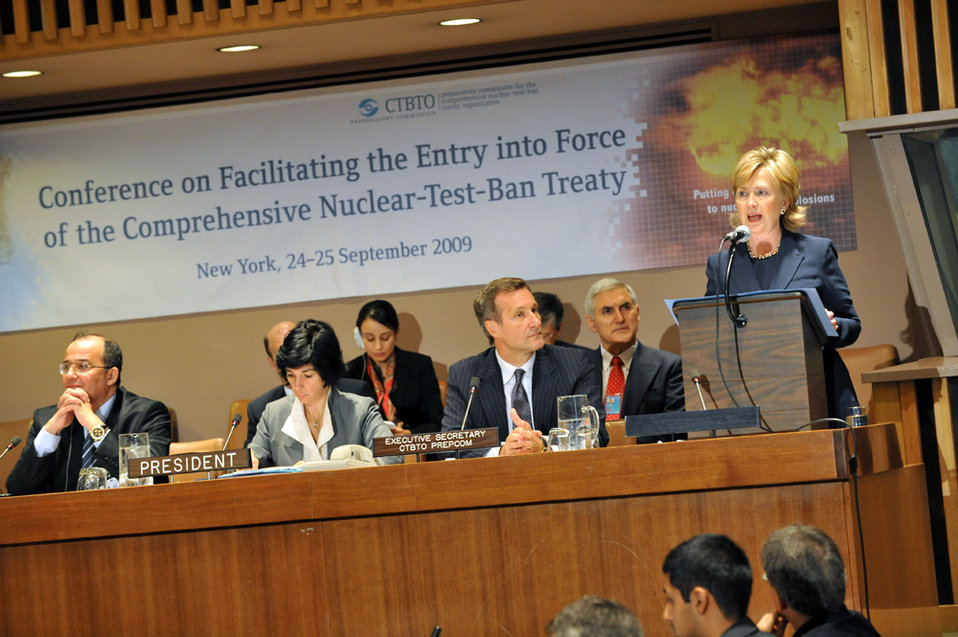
UNGA 2009: Comprehensive Nuclear-Test-Ban Treaty Conference

U.S. Secretary of State Hillary Rodham Clinton delivers remarks at the Comprehensive Nuclear-Test-Ban Treaty (CTBT) Article XIV Conference at the United Nations headquarters during the 64th Session of the UN General Assembly in New York City, New York September 24, 2009.